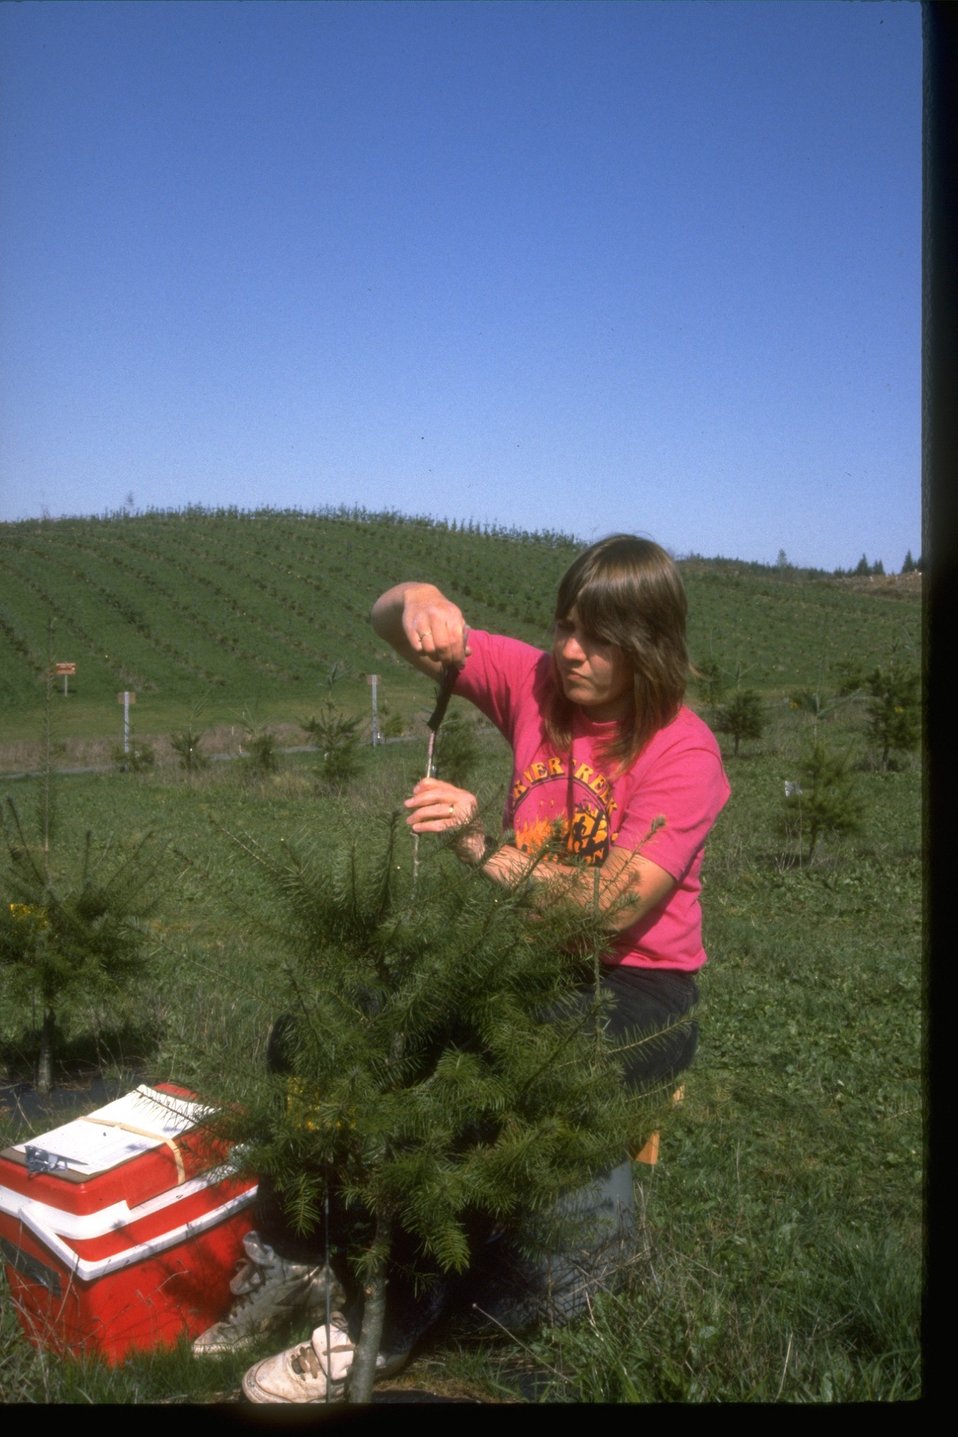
Grafting trees at Seed Orchard.